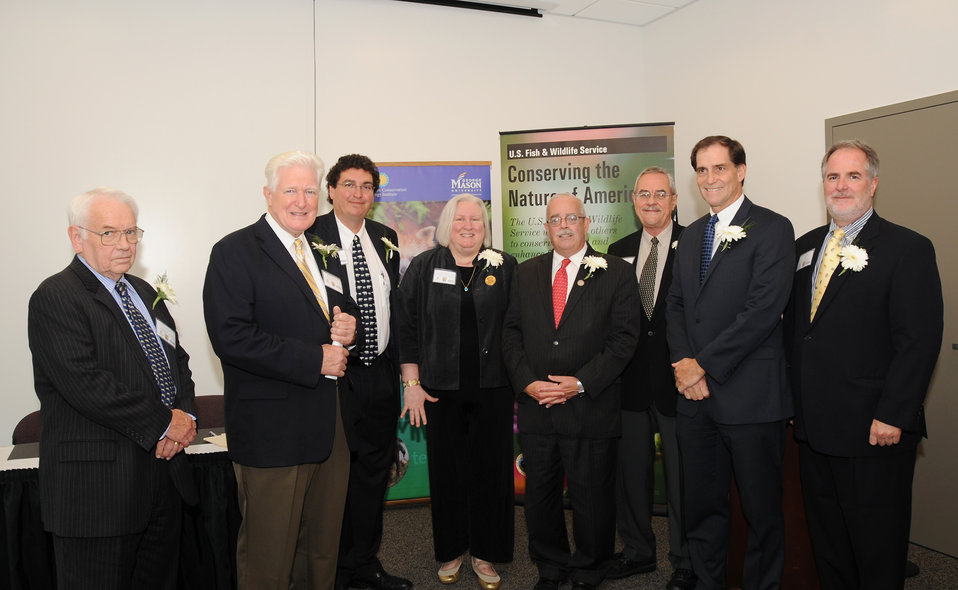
Together in Conservation

Memorandum of Understanding Signing Ceremony with U.S. Fish and Wildlife Service, Smithsonian Institution, and George Mason University. October 26, 2012